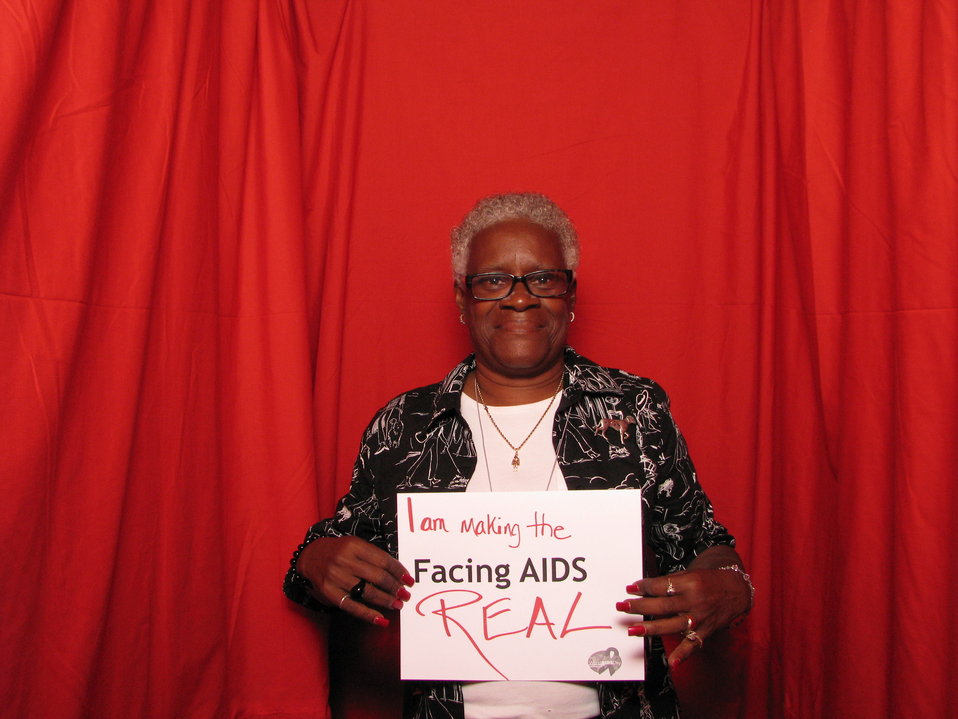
I am making the FACING AIDS REAL.

From the AIDS.gov photo booth at the U.S. Conference on AIDS, September 2010 (Orlando, FL).